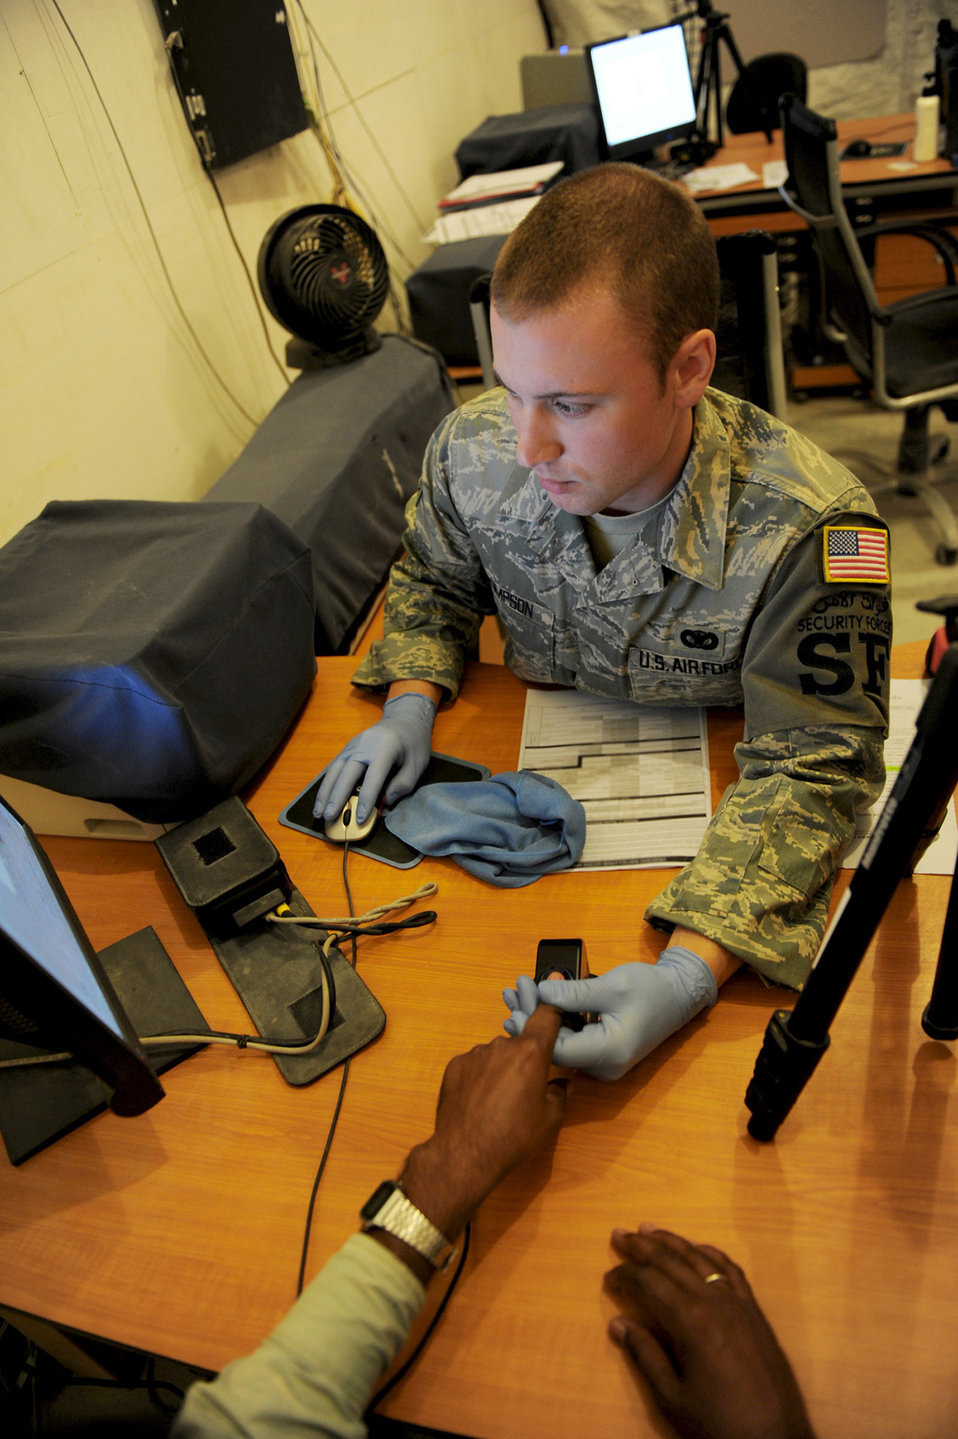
Biometric database offers security stamp of approval

Senior Airman Michael Thompson processes a third country national into the Defense Biometrics Identification System Aug. 2 at an air base in Southwest Asia. DBIDS is an enhanced security system used to monitor entry onto military installations. Airman Thompson is a 379th Expeditionary Security Forces Squadron DBIDS registrar.